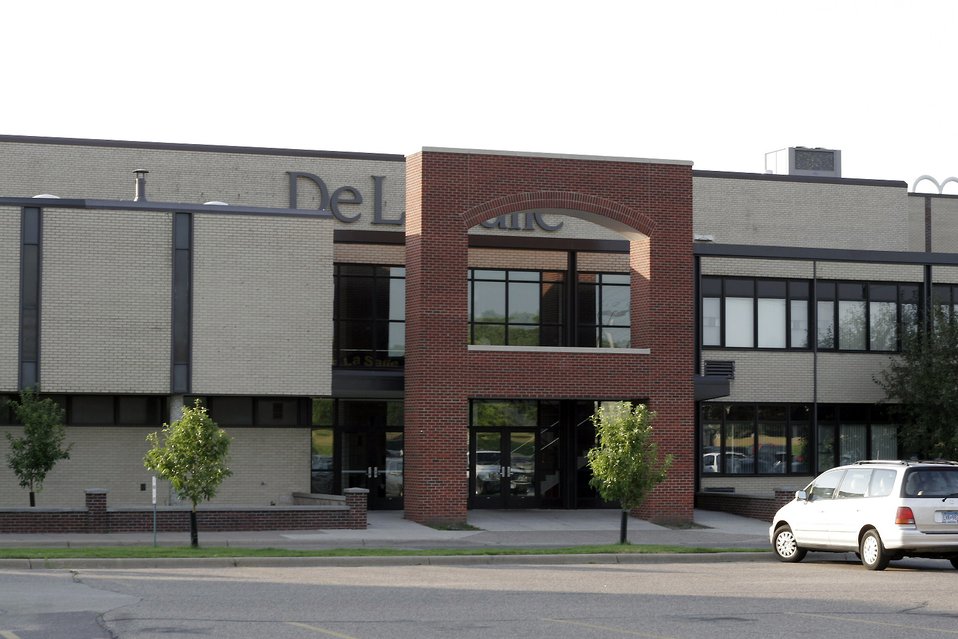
DeLaSalle High School, Minneapolis, in July 2006